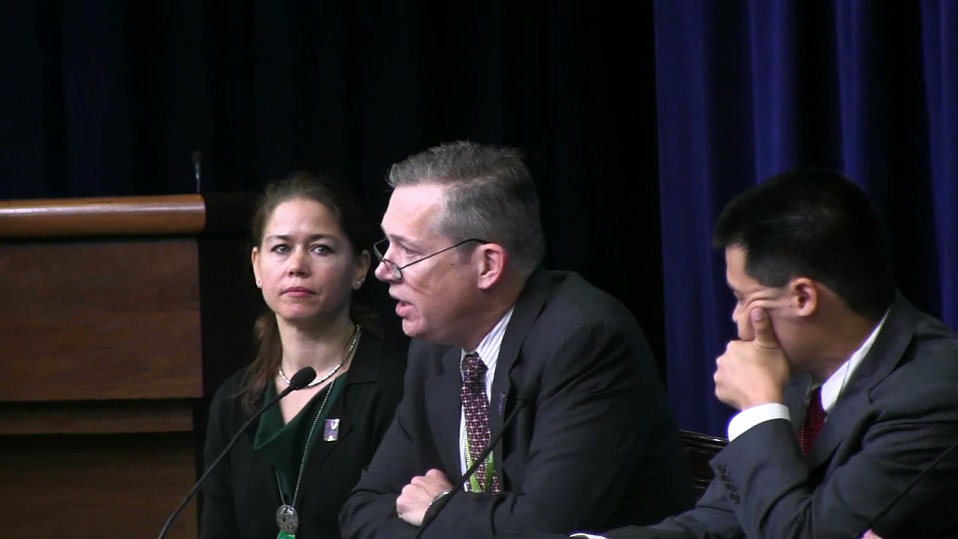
WHDpanel2